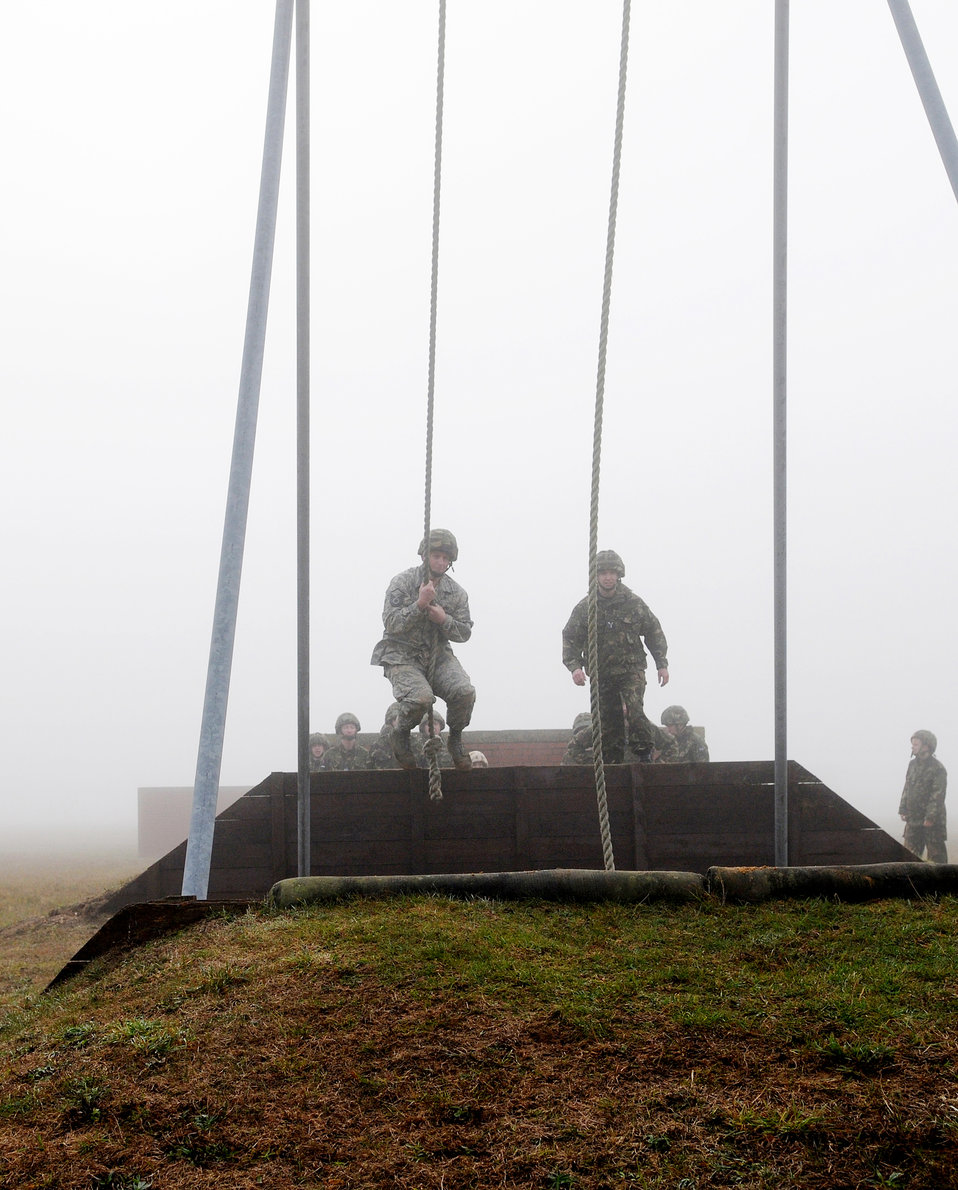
American, British forces join for leadership development

Master Sgt. Matthew Poole (left) swings over a sand pit during Leadership, Ethos and Air Power Day at Royal Air Force Marham Nov. 9, 2009. About 40 Airmen from RAFs Mildenhall and Lakenheath participated in the leadership building opportunities with their British counterparts. The event is normally hosted three times a year for RAF troops. The overall goal is to foster teambuilding and teach effective leadership techniques. Sergeant Poole is from the 48th Munitions Squadron.